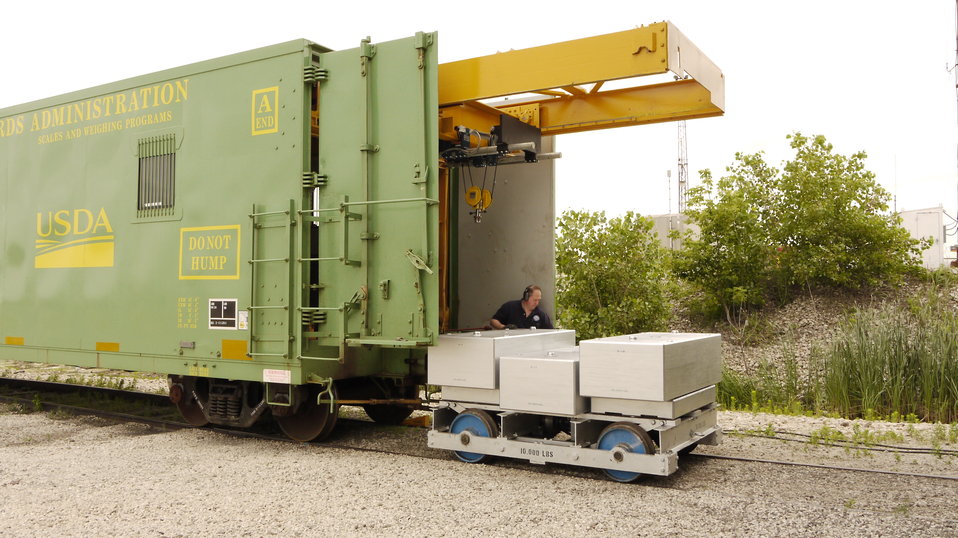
This is the U.S. Department of Agriculture’s (USDA) Grain Inspection, Packers, and Stockyard Administration (GIPSA) FGWX700000 test car unit with USDA GIPSA industrial specialist Marcus Harwitz unloading the 10,000 lb. test weight cart and 10,000 lb. test weight standards (blocks) at the USDA GIPSA Master Scale Depot in Chicago, IL on Jul 2, 2013. These weights can be loaded onto the test cart to make a total of a 100,000 lb. test weight group including the cart that is used to test railroad track scales for calibration. . USDA GIPSA entered into an agreement with the National Institute of Standards and Technology (NIST) and the Association of American Railroads (AAR) in 1980 transferring responsibility to USDA’s GIPSA to maintain the Master Scale facility in Chicago, IL and calibrate all the master scales in the continental U.S. annually.